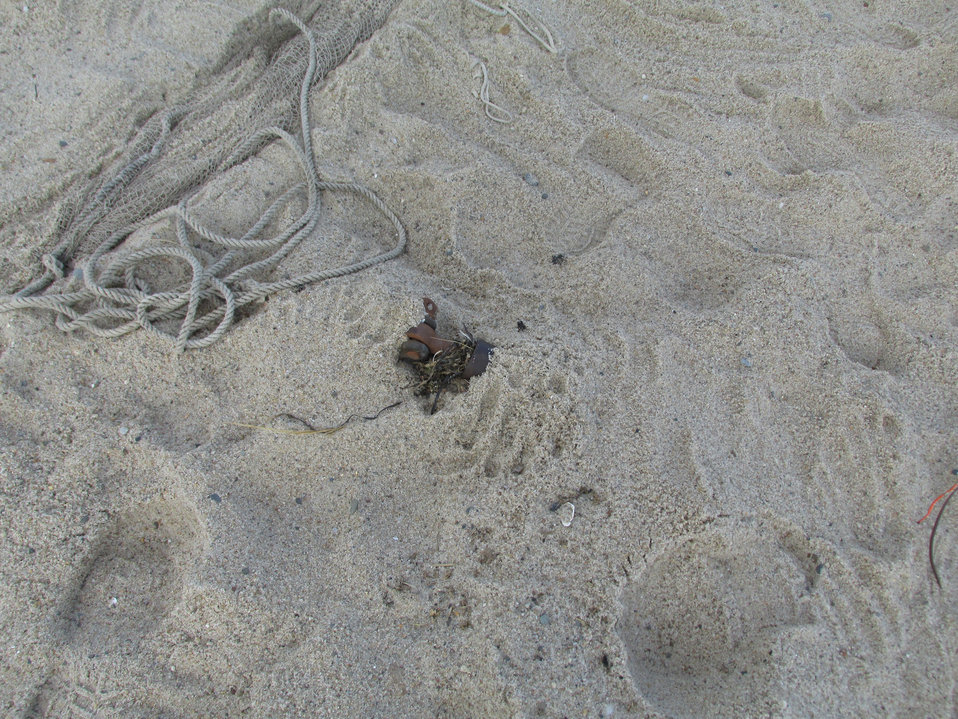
Cedit: USFWS